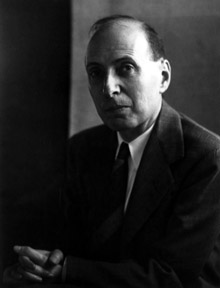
Eugene Wigner.